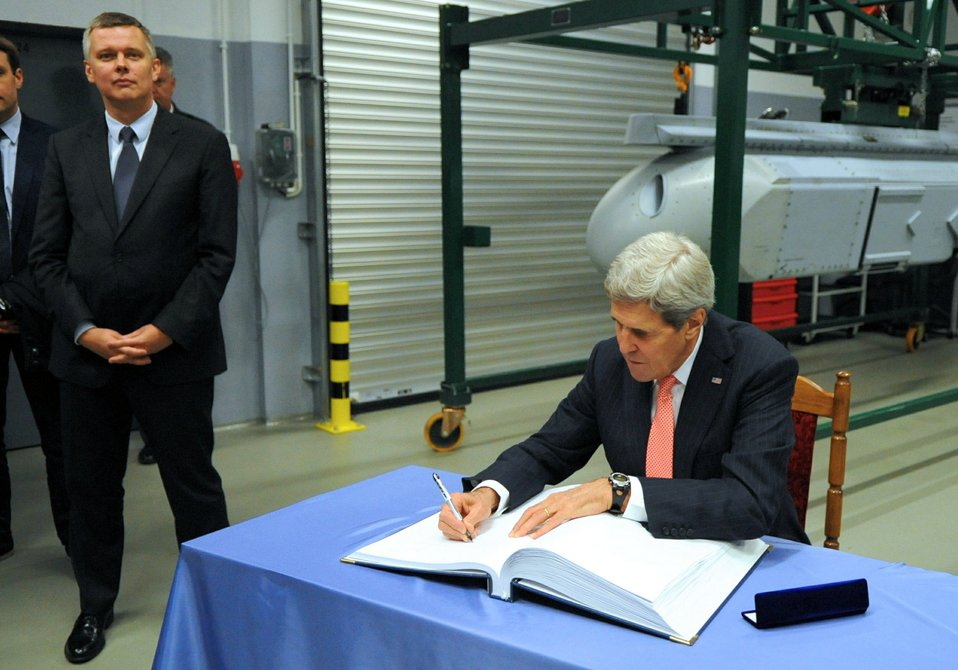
Secretary Kerry Signs the Guestbook at the Lask Polish Airbase

Polish Defense Minister Tomasz Siemoniak looks on as U.S. Secretary of State John Kerry signs the guestbook at the Lask Military Airbase in Poland before their meeting on November 5, 2013.